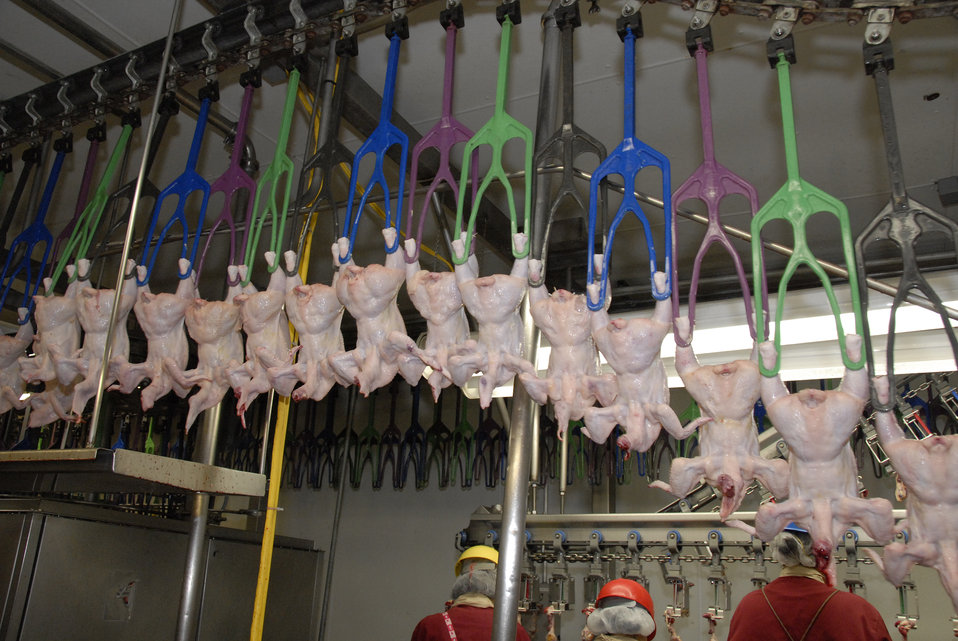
Chickens are carried through the Holmes poultry slaughterhouse in Nixon, Texas on June 10, 2008 on mechanical arms. U.S. Department of Agriculture (USDA) Food Safety and Inspection Service (FSIS) inspectors are on site to ensure the chicken is processed in accordance with USDA FSIS regulations.